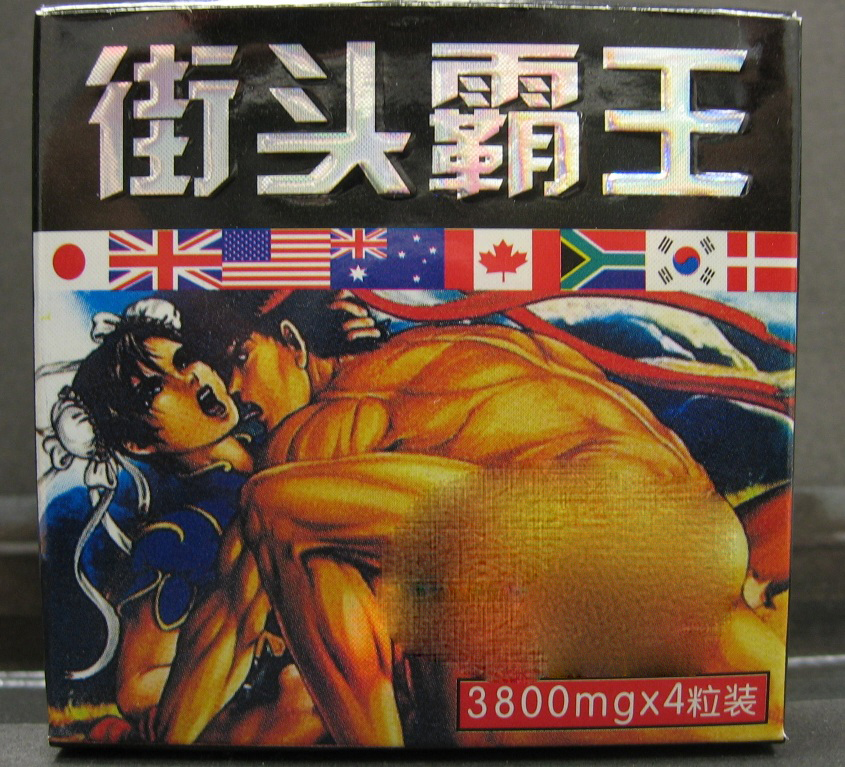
Stree Overlord

April 5, 2012 - The FDA is advising consumers not to purchase or use 'Stree Overlord,' a product promoted and sold for sexual enhancement. The product was found to contain undeclared sildenafil. For more information, go to www.fda.gov/Drugs/ResourcesForYou/Consumers/BuyingUsingMe...

And read this Consumer Update: Beware of Fraudulent ‘Dietary Supplements’